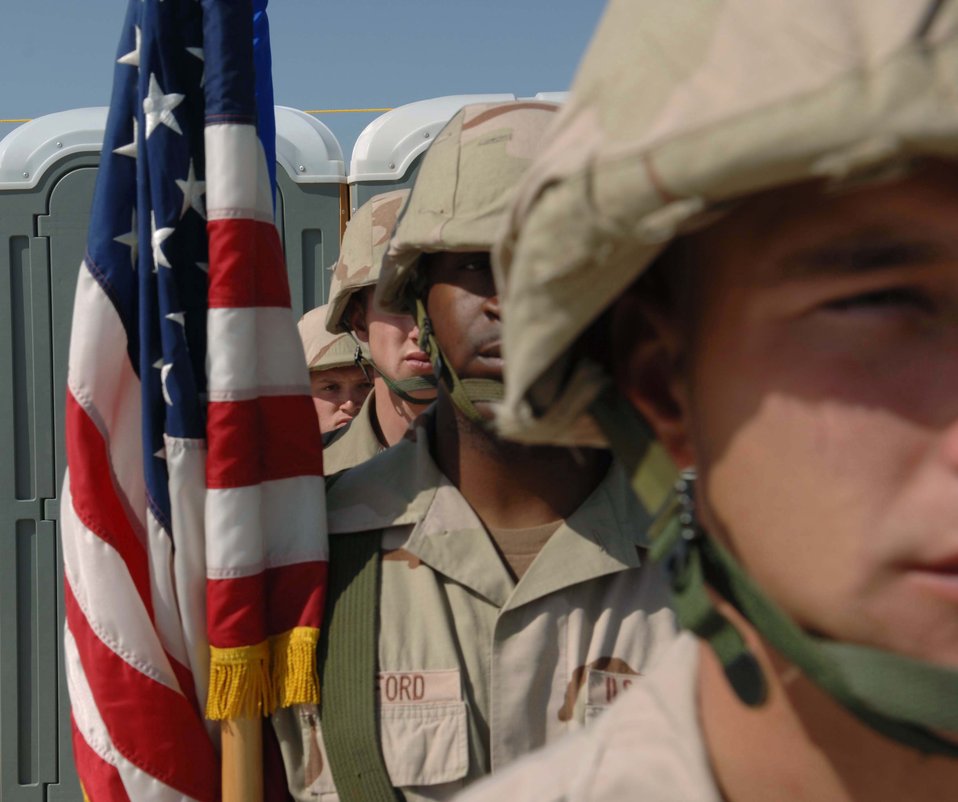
Combat colors

BAGRAM AIR BASE, Afghanistan -- (From front) Senior Airman Gary McCormick, Tech. Sgt. Xavier Sanford, Senior Airman Robert Welch and Staff Sgt. Stephen Manley present the colors during a change of command ceremony here May 15. Sergeant Sanford is assigned to the 455th Expeditionary Logistics Readiness Squadron, and Sergeant Manley and Airmen Welch and McCormick are assigned to the 455th Expeditionary Security Forces Squadron.